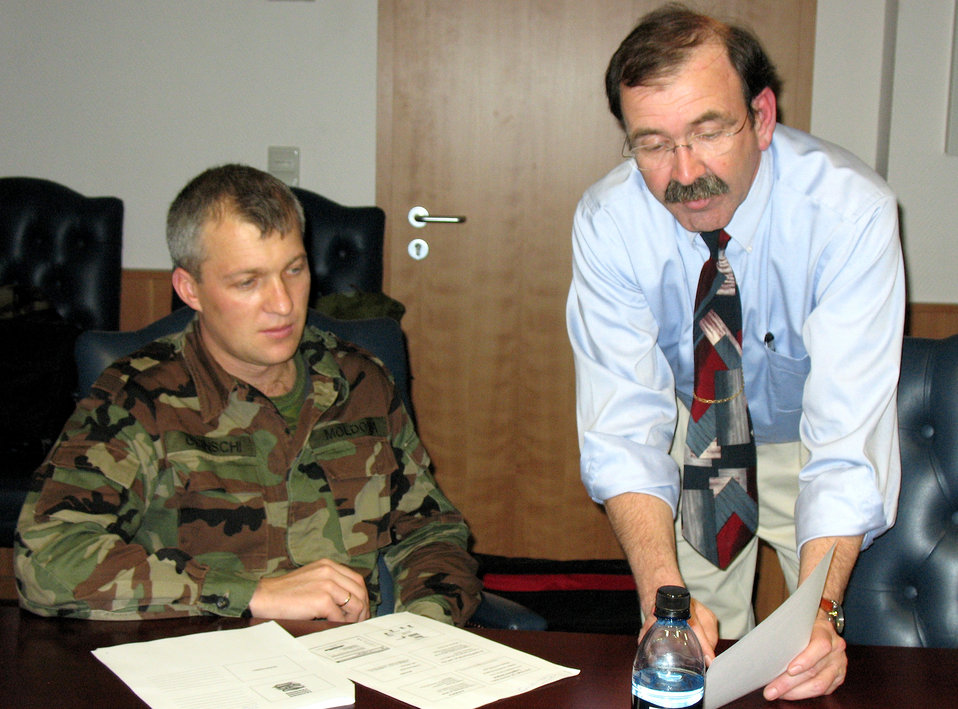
Moldovan officers visit Ramstein

Milan Christi, with the United States Air Forces in Europe personnel office at Ramstein Air Base, Germany, briefs Lt. Colonel Sergiu Ocinschi, a Moldovan army communications officer, about the role of contractors in the Air Force. Colonel Ocinschi and three other officers from Moldova visited Ramstein to learn about the U.S. Air Force human resources program since their country's military is currently undergoing changes.